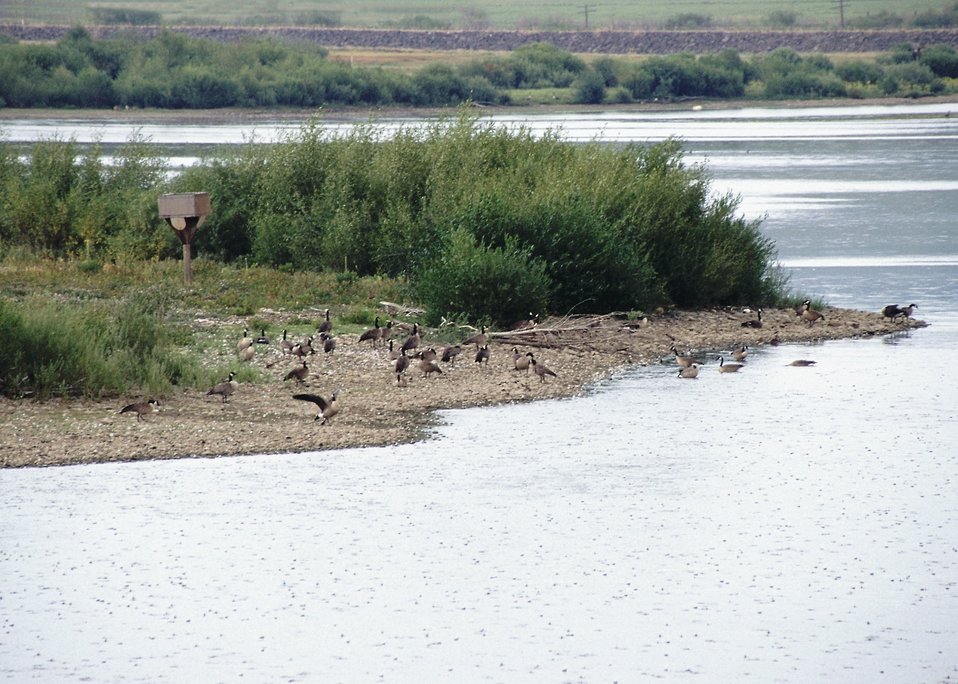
Riparian area of Behler